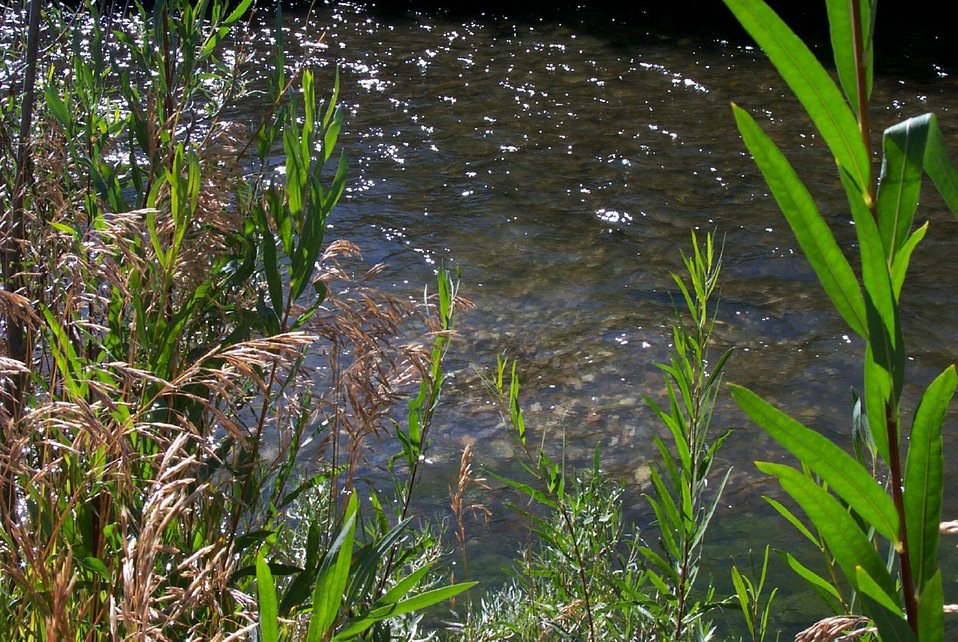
Fish habitat Salmon Field Office UCSC Upper Columbia Salmon Clearwater District